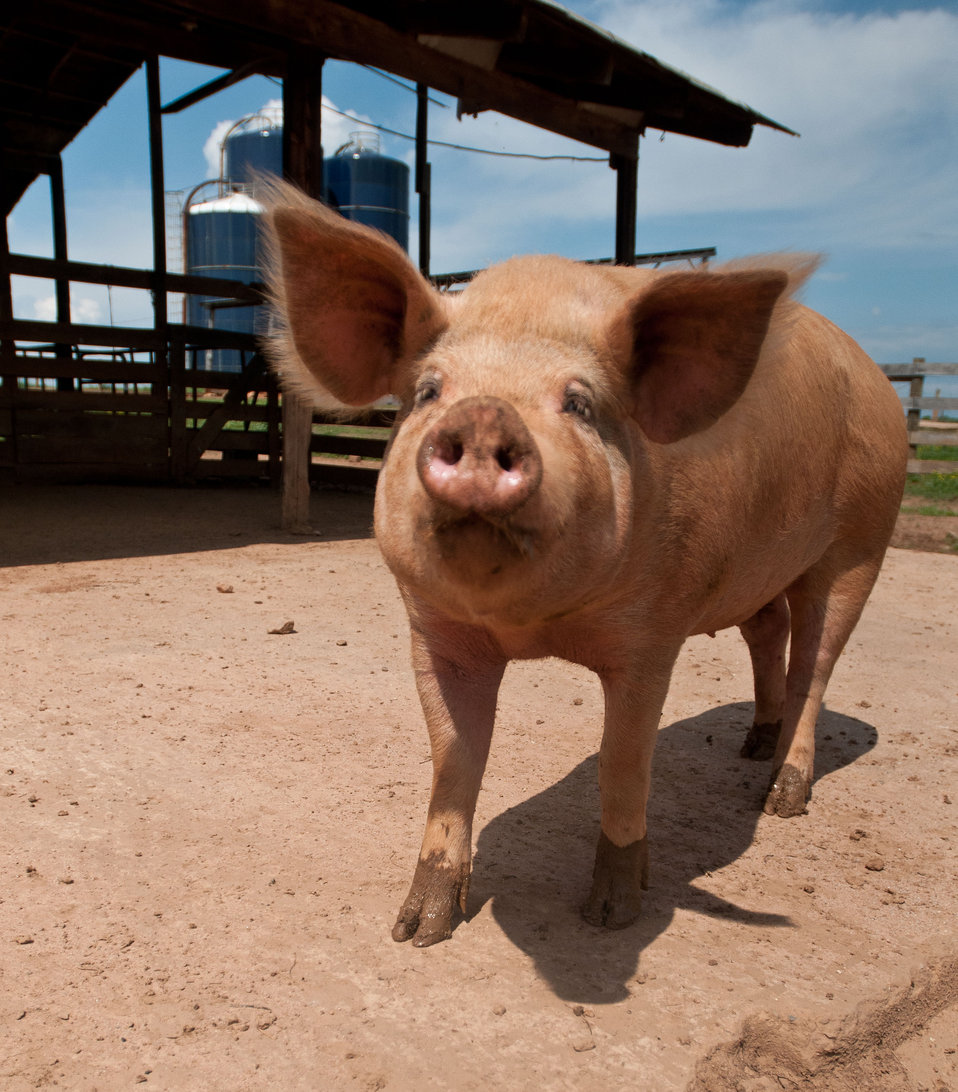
gs at Keenbell Farm are pasture raised by 3rd generation farmer C.J. Isbell in Rockville, VA, on Friday, May 6, 2011. The farm was established in 1951, and produces grass-fed beef, pastured pork, and free-range eggs beyond organic standards. Keenbell Farms pork products range from sausage, to bacon, pork chops, roasts, bratwurst, and many more. A majority of their diet is grass and roots. They are offered corn, soybean, minerals, and a hay mixture that was developed by the farm. Raising the pigs on pastures reduces odor problems, and avoids hazardous waste issues by distributing the manure. Pastures are rotated at least, every 90 days to allow the grass and land to re-grow. Keenbell and other farms produce meat products for Fall Line Farms food hub that offer a wide variety of household food staples and specialty items. Members can pick their customized orders from an ever changing inventory of fruits, vegetables, meats, soaps, eggs, cheeses, flowers, honey, pastas, sauces, syrups, baked goods, mushrooms, flour and grains. Suppliers post what they have to sell on Lulus Local Food online listing where customers can make their selection. Every Thursday, suppliers team up to deliver customized orders to, one of several pick-up points, designated by the customer in or around the Richmond, VA area.